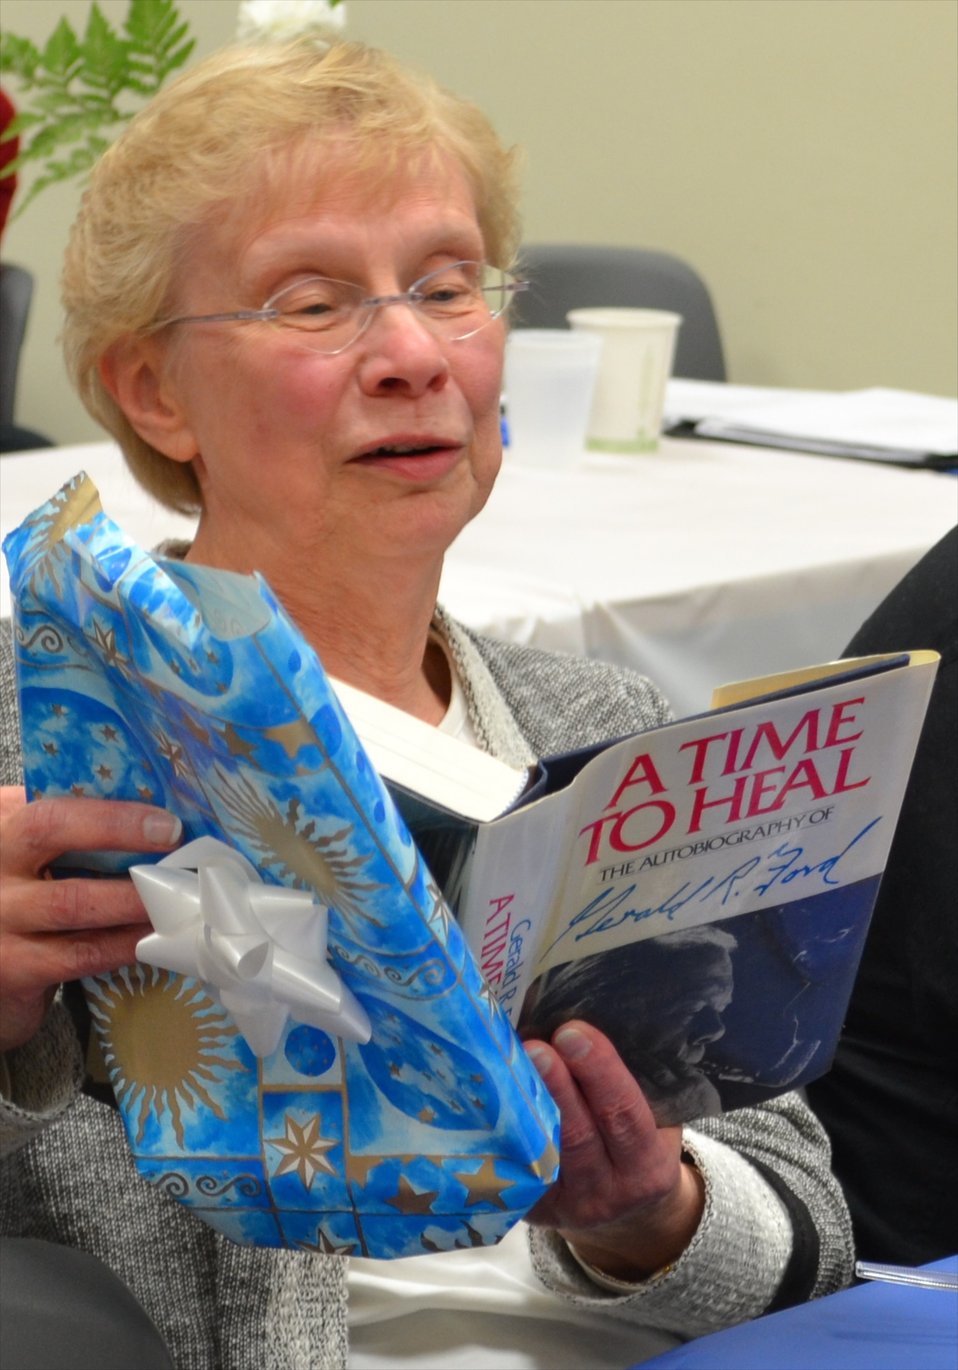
At Helmi Raaska’s retirement party, she received an autograph copy of “A Time To Heal” by Gerald R. Ford.; Location: Geral Ford Presidential Library, Ann Arbor, MI